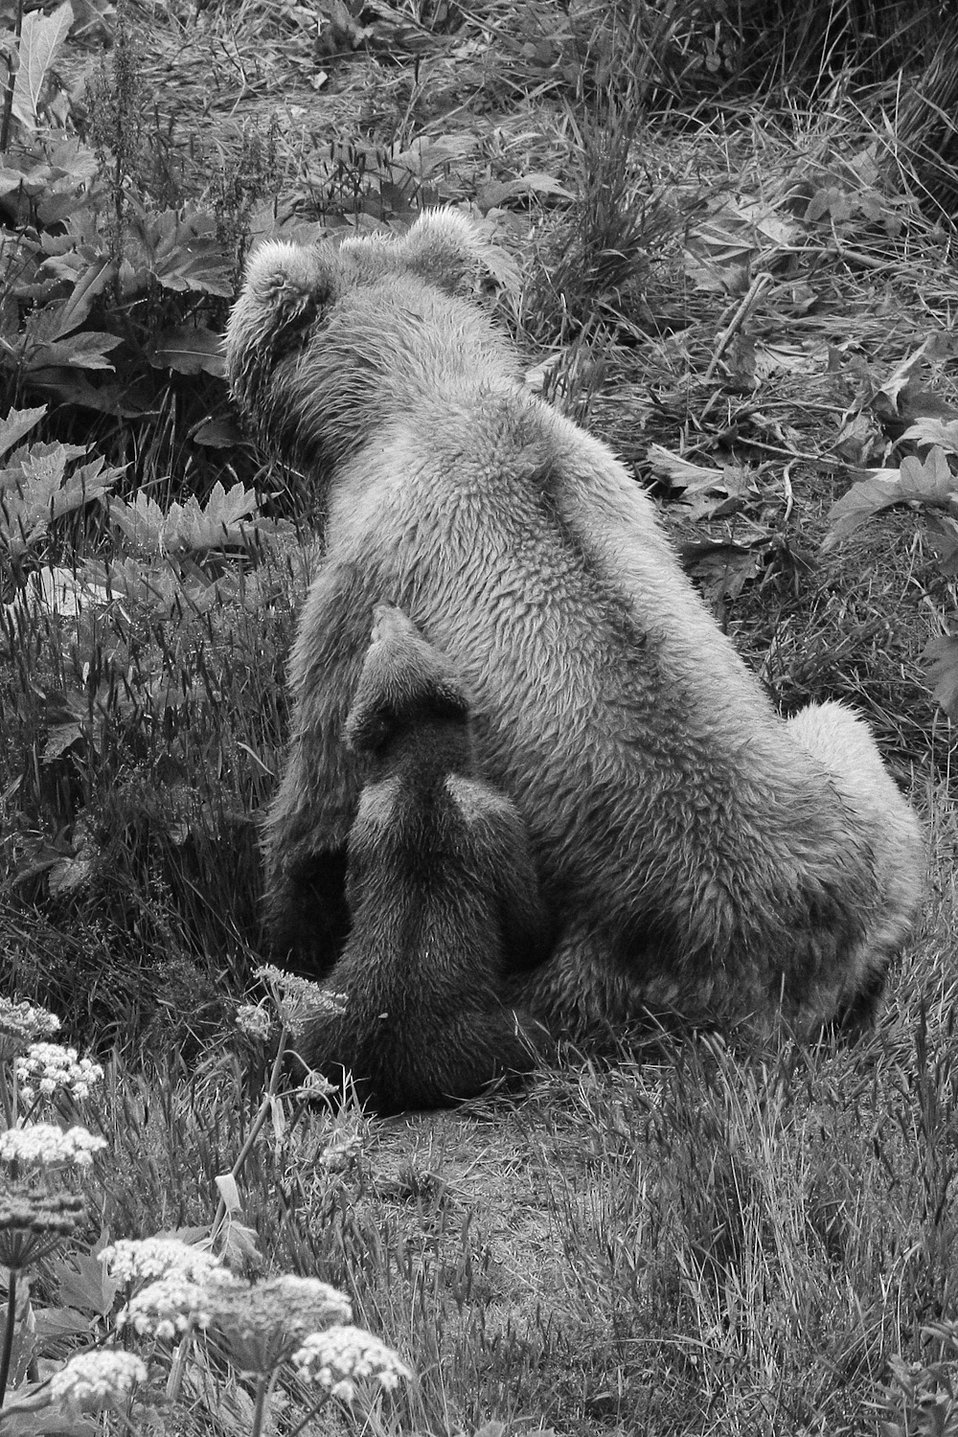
Sow and cub of the year

Kodiak brown bears at Frazer Fish Pass.
Lisa Hupp/USFWS